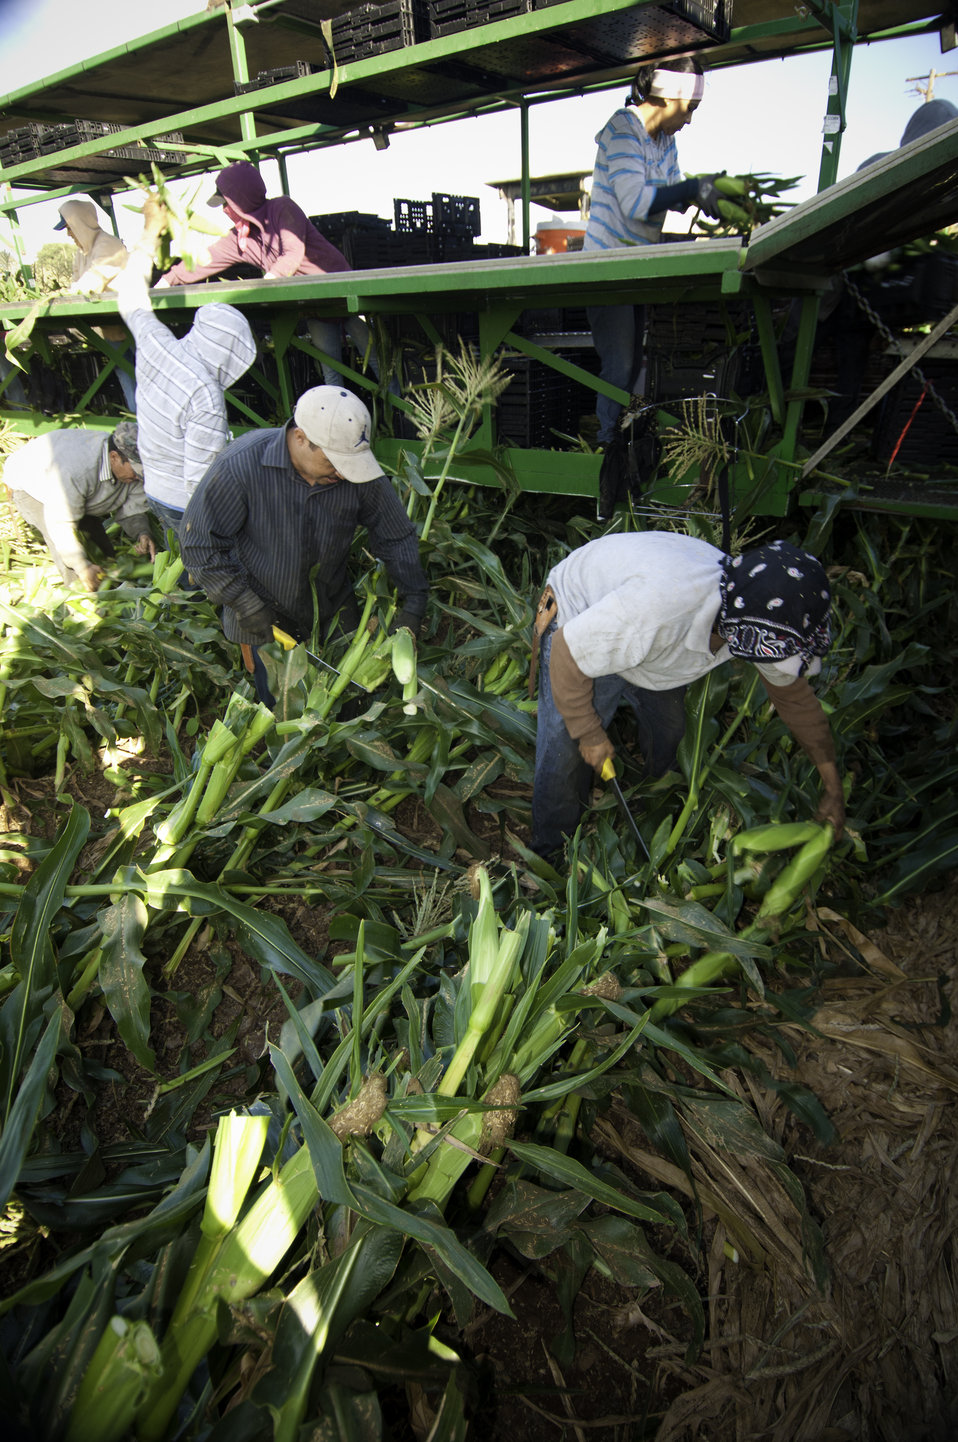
Migrant workers harvest corn on Uesugi Farms in Gilroy, CA on Wednesday, Aug. 28, 2013.